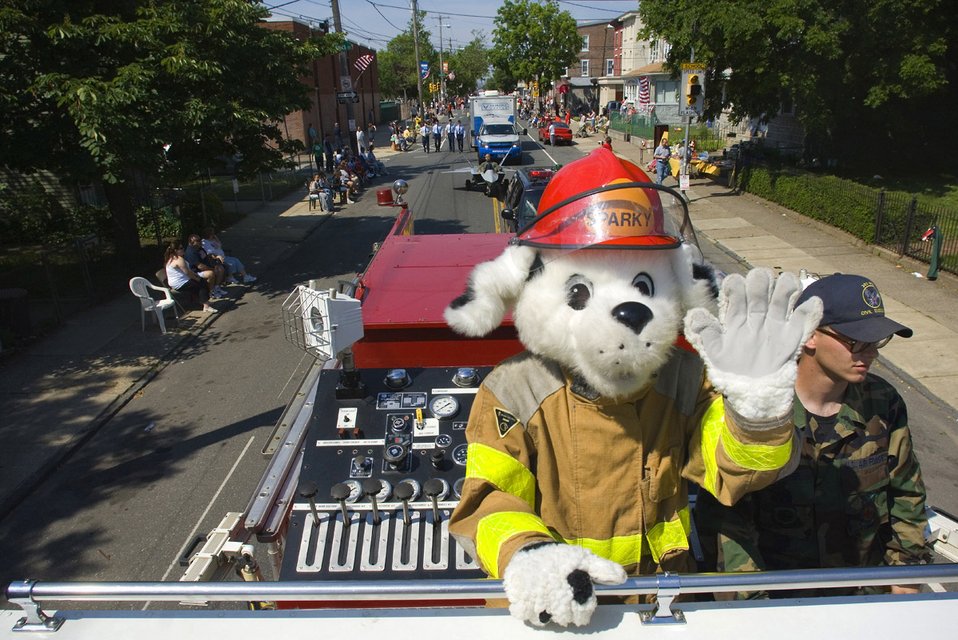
Philly Air Force Week

Sparky the Fire Dog catches a ride with the McGuire Air Force Base, N.J. fire department during the Bridesburg Memorial Day Parade May 26. Bridesburg is a borough in Philadelphia and hosted the kickoff celebrations for Air Force Week Philadelphia. Air Force Week Philadelphia is an event designed to build new relationships in the Philadelphia metropolitan area and strengthen public support for the Air Force mission and Airmen serving worldwide in the war on terrorism.